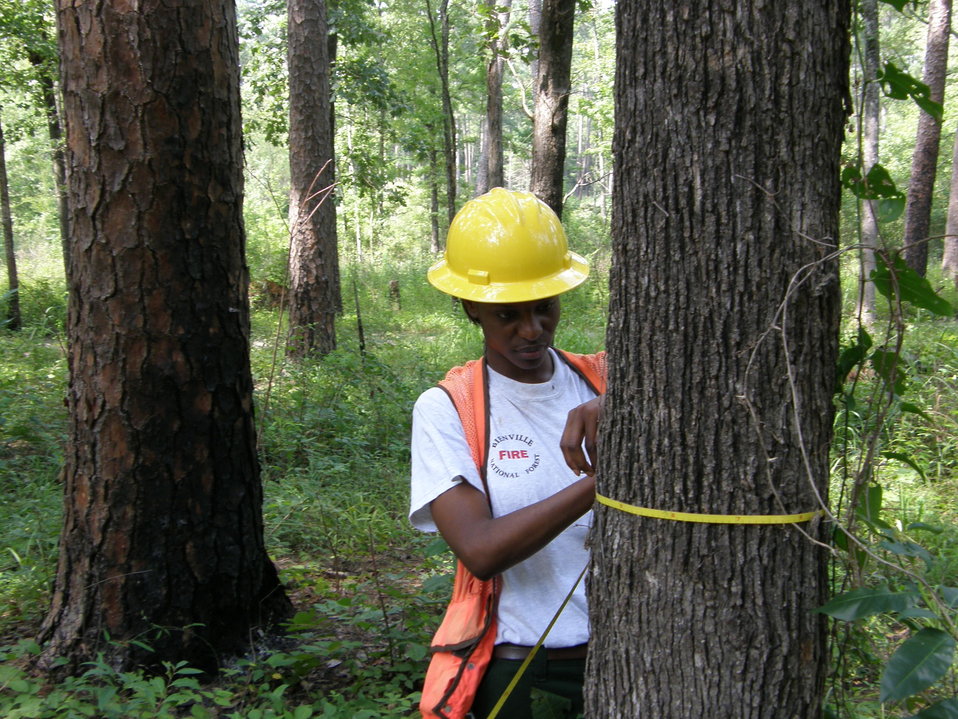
U.S. Forester Christina Harper inventories a pine stand on the Bienville National Forest in Mississippi on Monday, July 30, 2012. The Bienville Ranger District is home to scarce communities of red-cockaded woodpeckers and Harper’s data is used to develop the necessary forest prescriptions to treat stand structures to meet the forest’s land management objectives including activities such as timber sales or herbicide treatments.